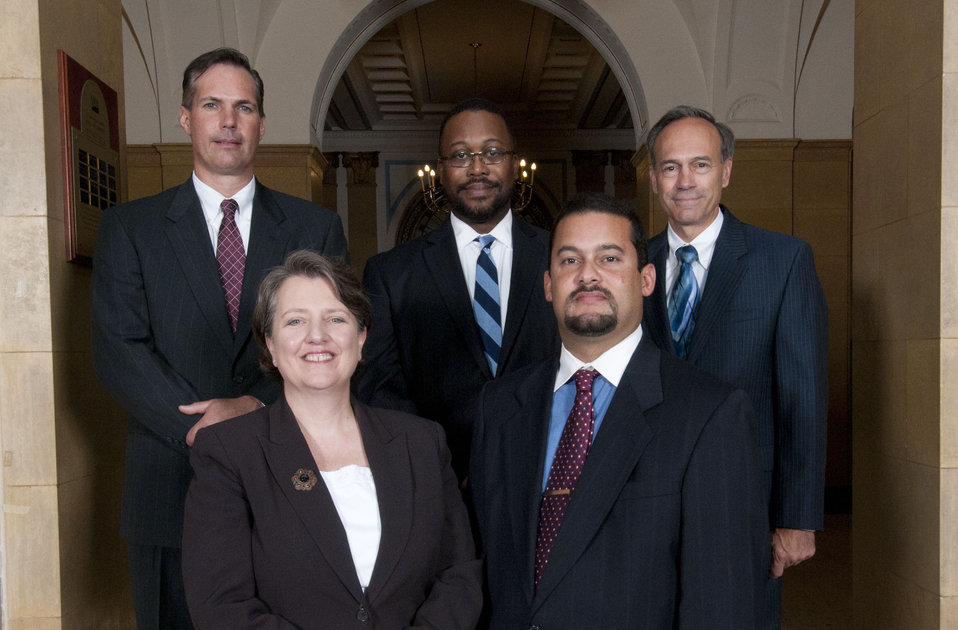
Business Practices Investigative Team. Grain Inspection, Packers and Stockyards Administration, Des Moines, IA. William Arce-Arana, Group Leader. In recognition of your dedicated and professional efforts returning over $1 million to 2,382 producers who sold hogs to a packer that used an unfair and deceptive carcass evaluation program. On September 14, 2011 in the patio of the Whitten Building Patio of the US Department of Agriculture in Washington, DC.